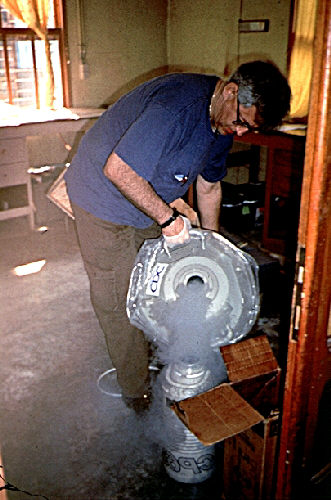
CDC epidemiologist opens tank of liquid nitrogen in Kikwit, Zaire.